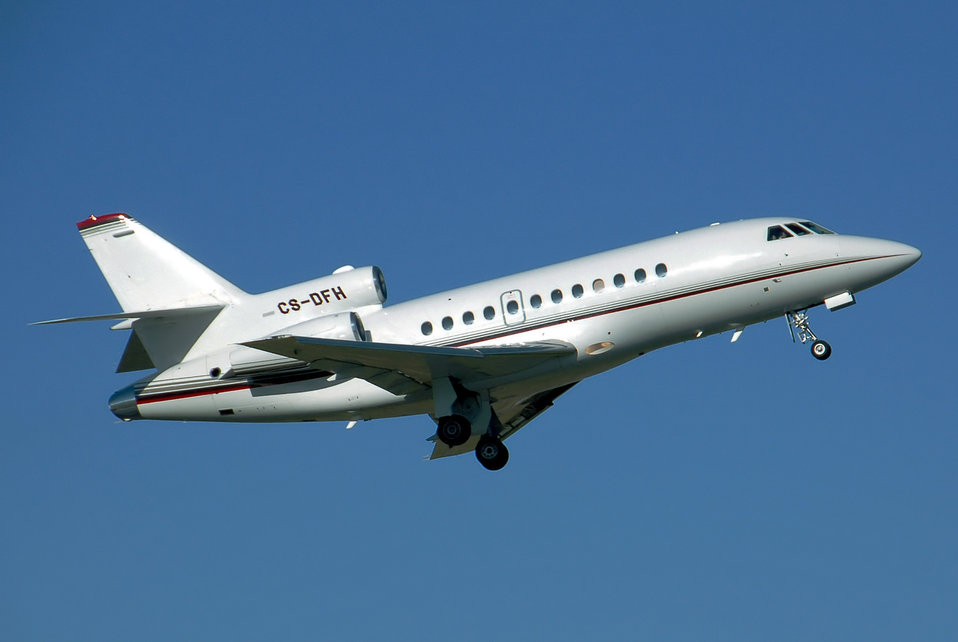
Dassault.falcon900.cs-dfh.arp